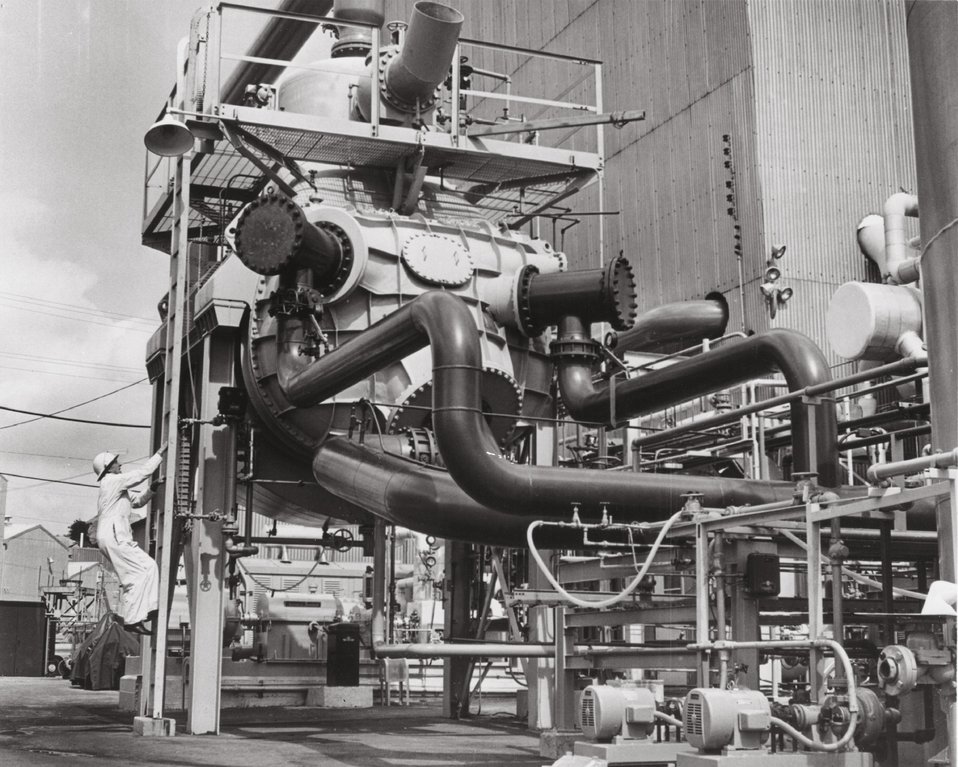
Primary purpose of the Sodium Component Test Installation (SCTI) is to test sodium heated steam generators and sodium-to-sodium intermediate heat ex-changers under simulated power plant conditions. c. 1973